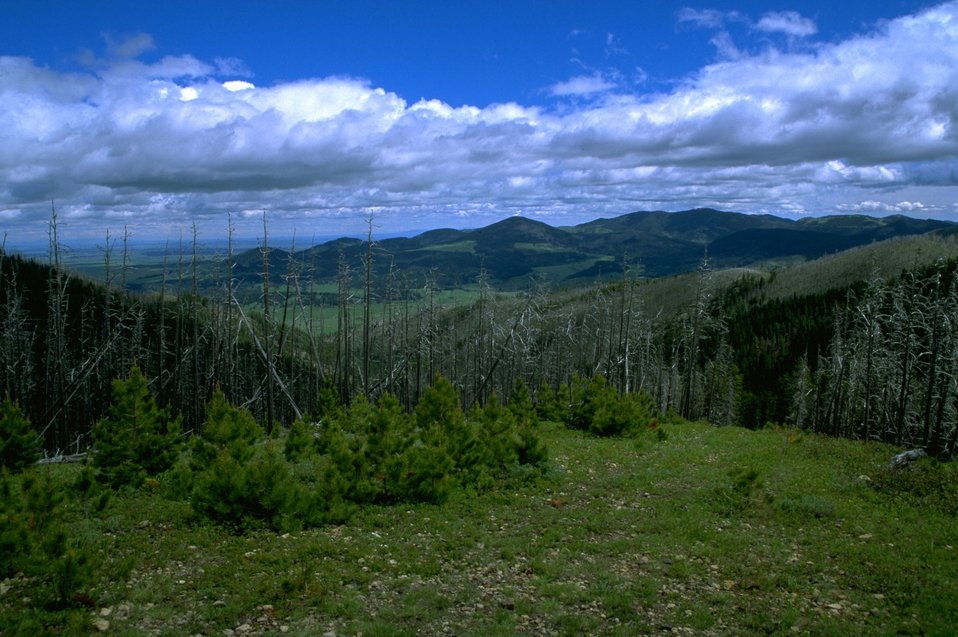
Clouds hanging over the mountains in the Judith Mountains area